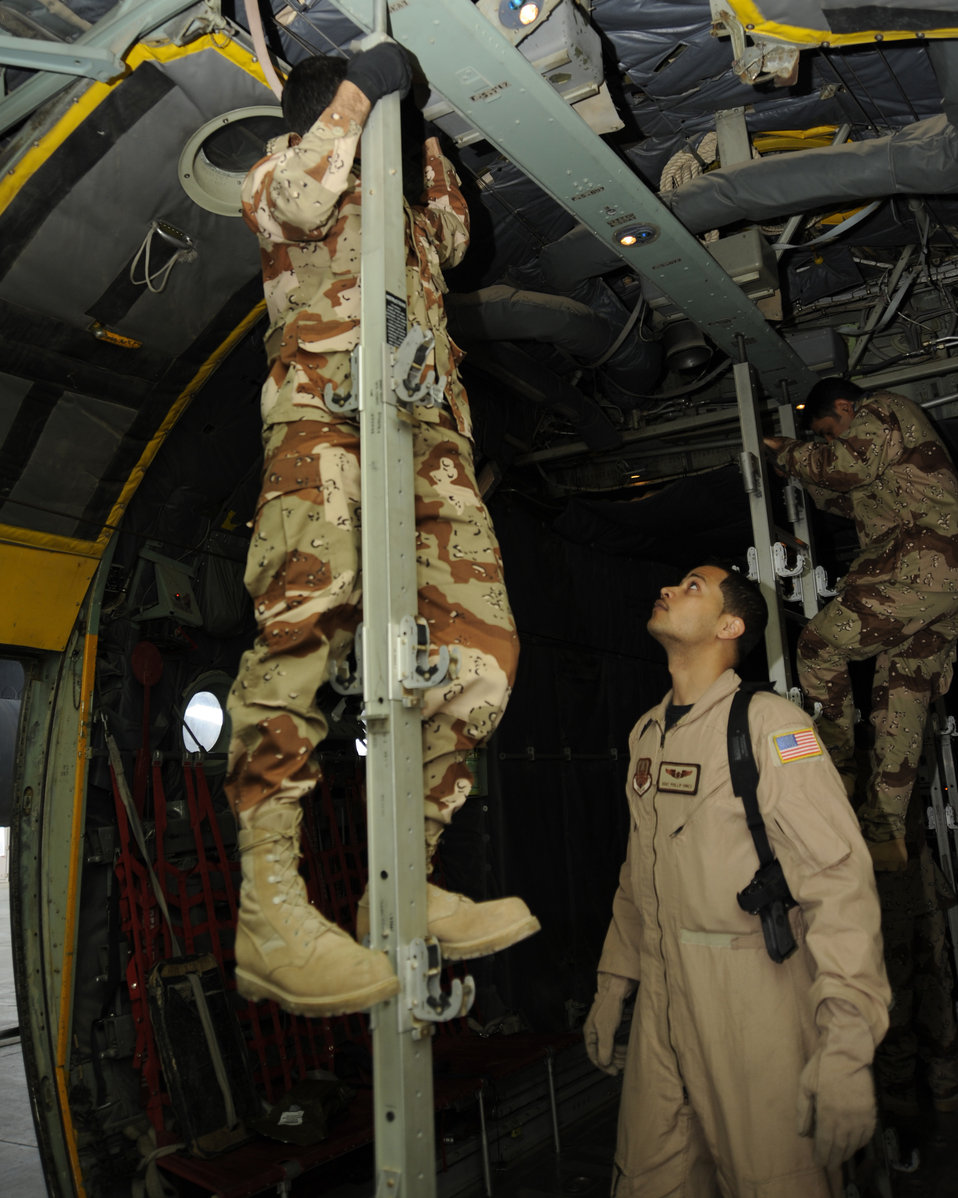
Iraqi medics complete aeromedical evacuation course

Staff Sgt. Phillip Hines ensures an Iraqi air force medic reconfigures a C-130 Hercules aircraft correctly for patient transport during a patient movement exercise at New Al-Muthana Air Base, Iraq, Dec. 3. Sergeant Hines is deployed from the United States Air Force School of Aerospace Medicine in San Antonio. Sergeant Hines is an aeromedical evacuation instructor.